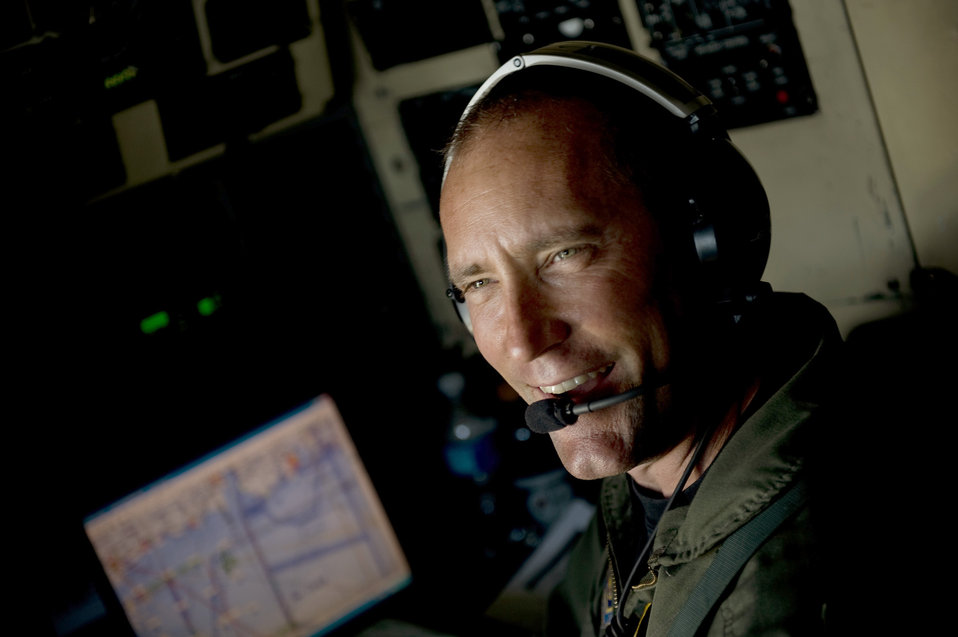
C-130 aircrew helps fight oil spill

Lt. Col. Jeff Shaffer listens to radio chatter as he flies a reconnaissance mission over the Gulf of Mexico to look for signs of oil as part of Deepwater Horizon Response May 7, 2010. Colonel Shaffer is a navigator of a C-130 Hercules from the Air Force Reserve Command's 910th Airlift Wing at Youngstown-Warren Air Reserve Station, Ohio.